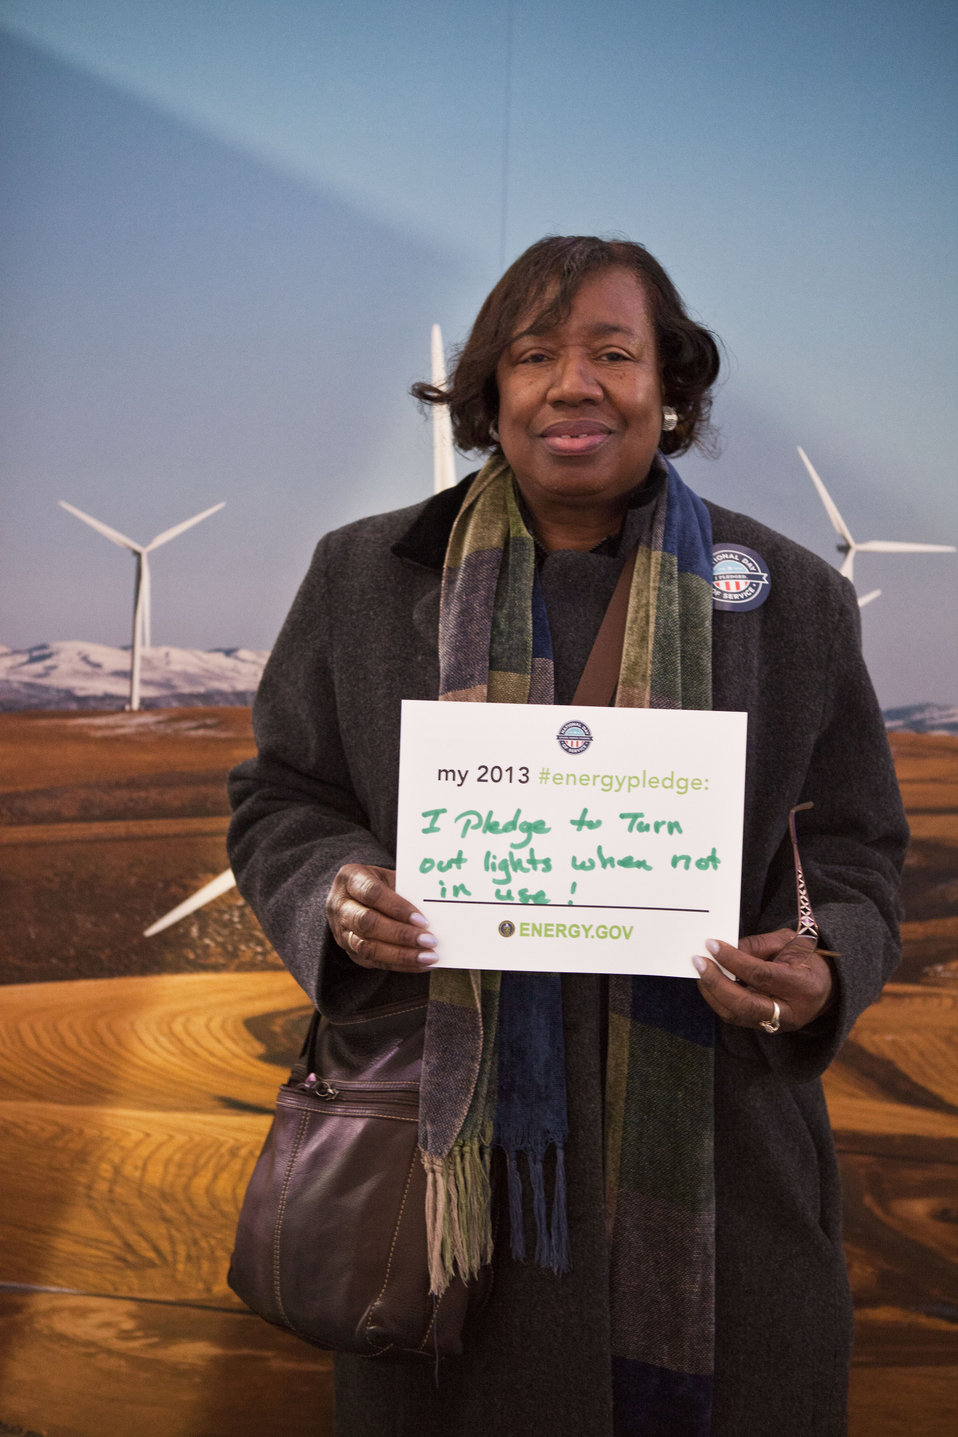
What's your #energypledge?